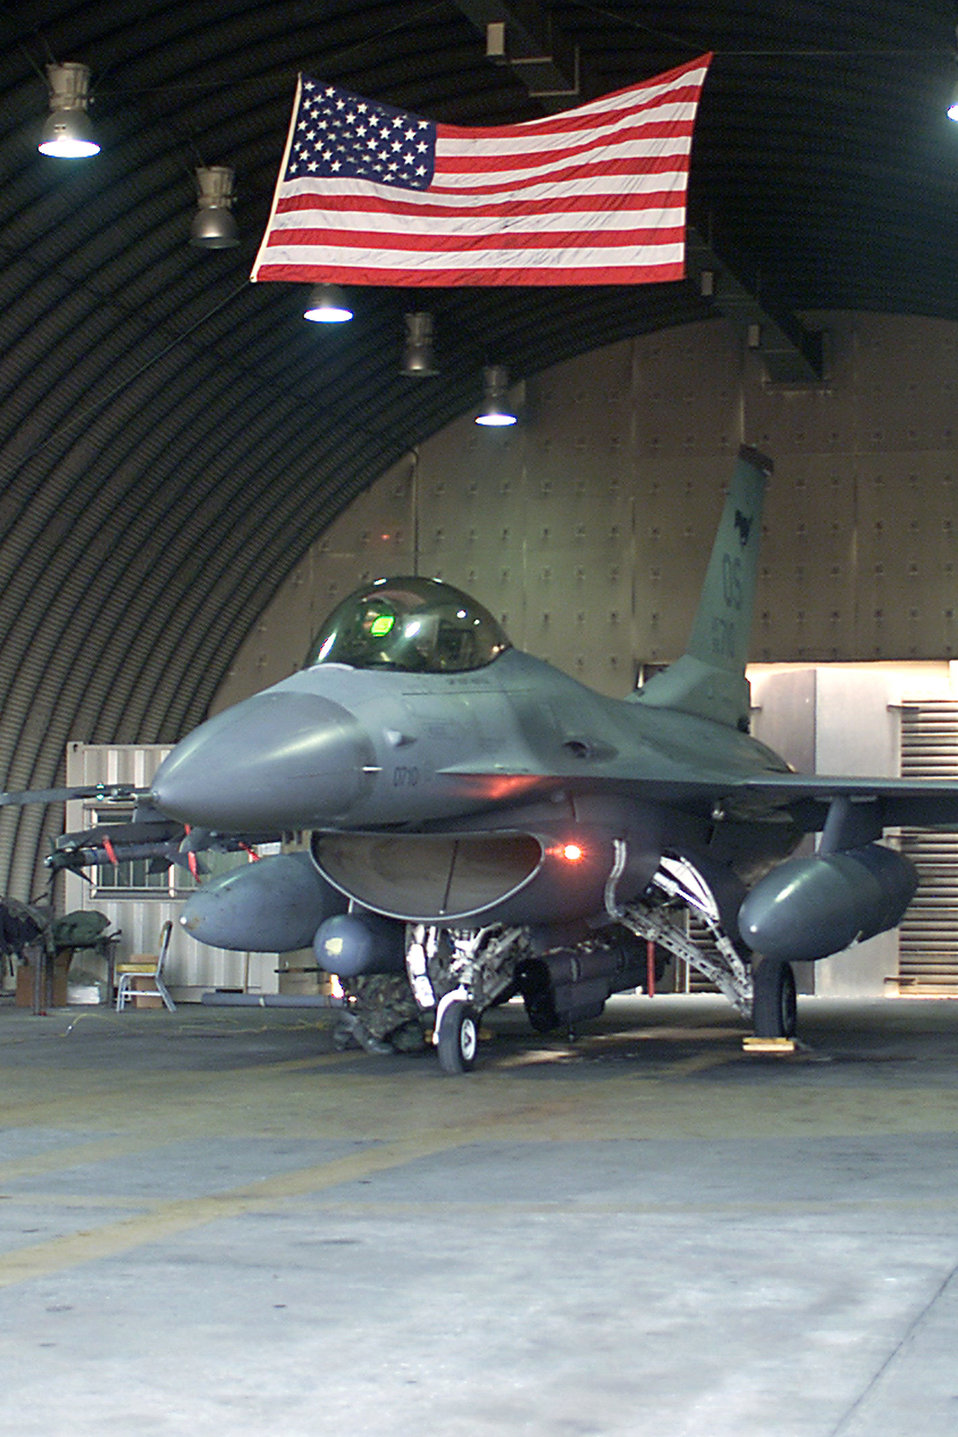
Go to your bunker

OSAN AIR BASE, South Korea -- An F-16 Fighting Falcon gets positioned safely back in its bunker during an exercise here recently.